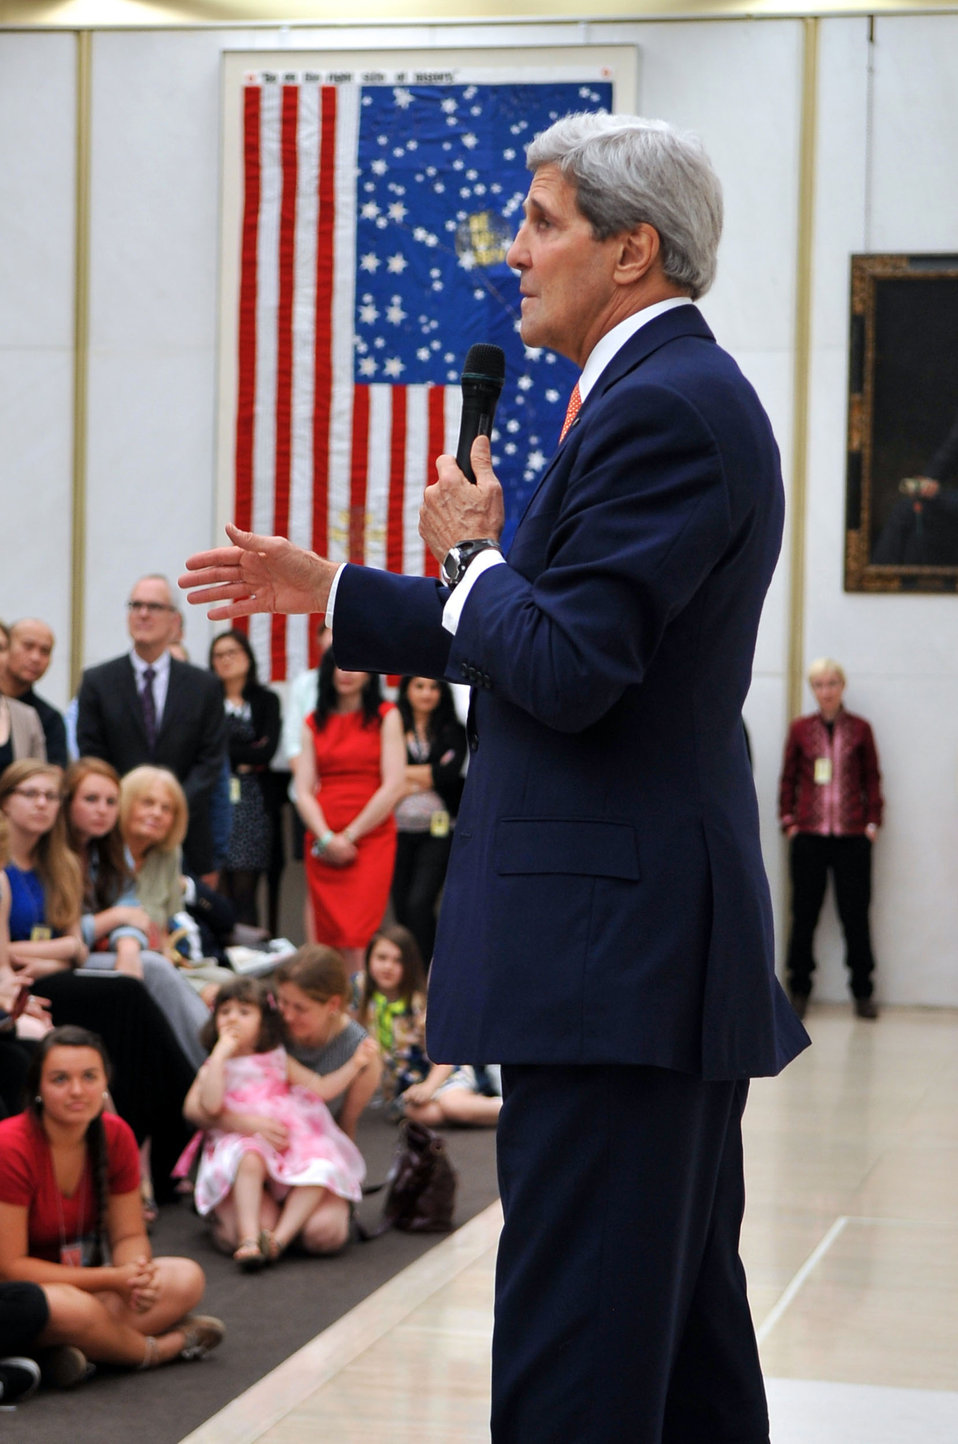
Secretary Kerry Addresses Embassy London Staff and Families

U.S. Secretary of State John Kerry addresses the staff, family, and friends of Embassy London during a visit to the United Kingdom on June 13, 2014.